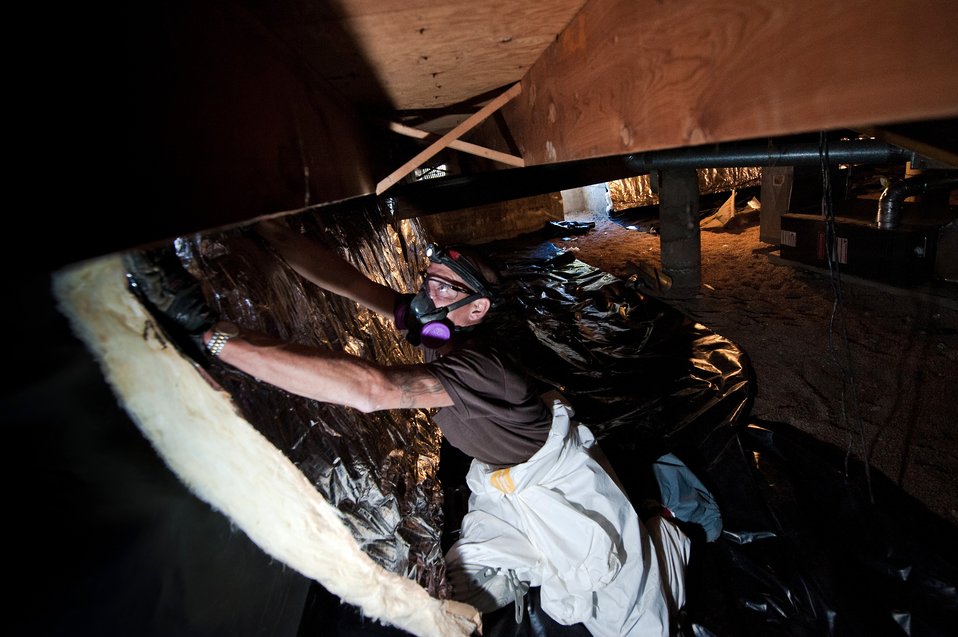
David Poindexter with Veterans Green Jobs, puts moisture barrier and insulation into the crawl space of this Lakewood, Colorado, home. This home is part of the Energy Department's Weatherization Assistance Program that supports energy efficiency upgrades to low-income homes in Denver. In addition, the Department's Weatherization and Intergovernmental Program supports development of National Residential Retrofit Guidelines that will improve worker training and workforce development for weatherization and home improvement workers and enable these industries to increase the value of their services to homeowners.